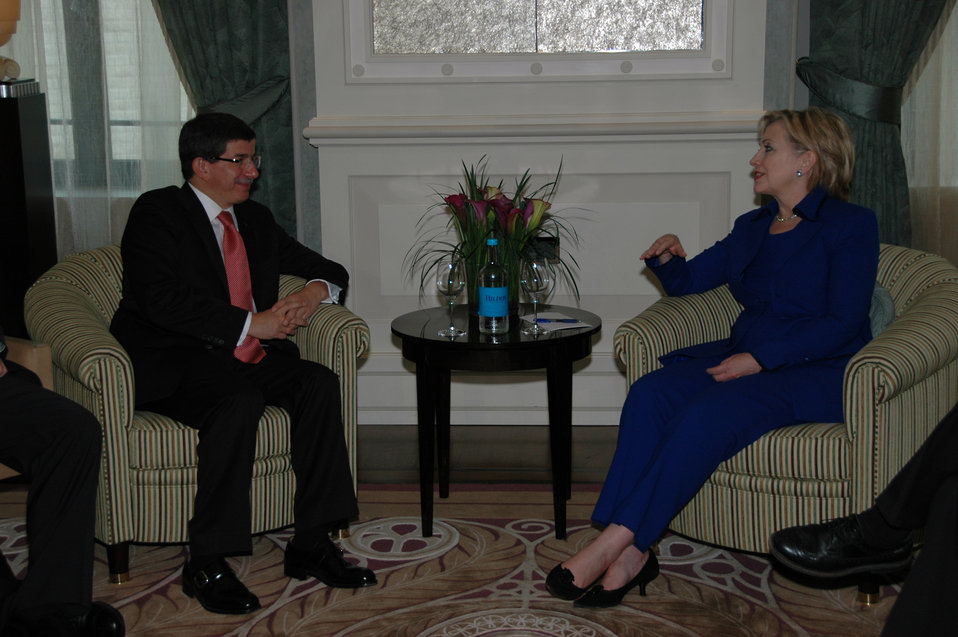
Secretary Clinton Meets With Turkish Foreign Minister

U.S. Secretary of State Hillary Rodham Clinton with Turkish Foreign Minister Ahmet Davutoglu in Zurich, Switzerland October 9, 2009.